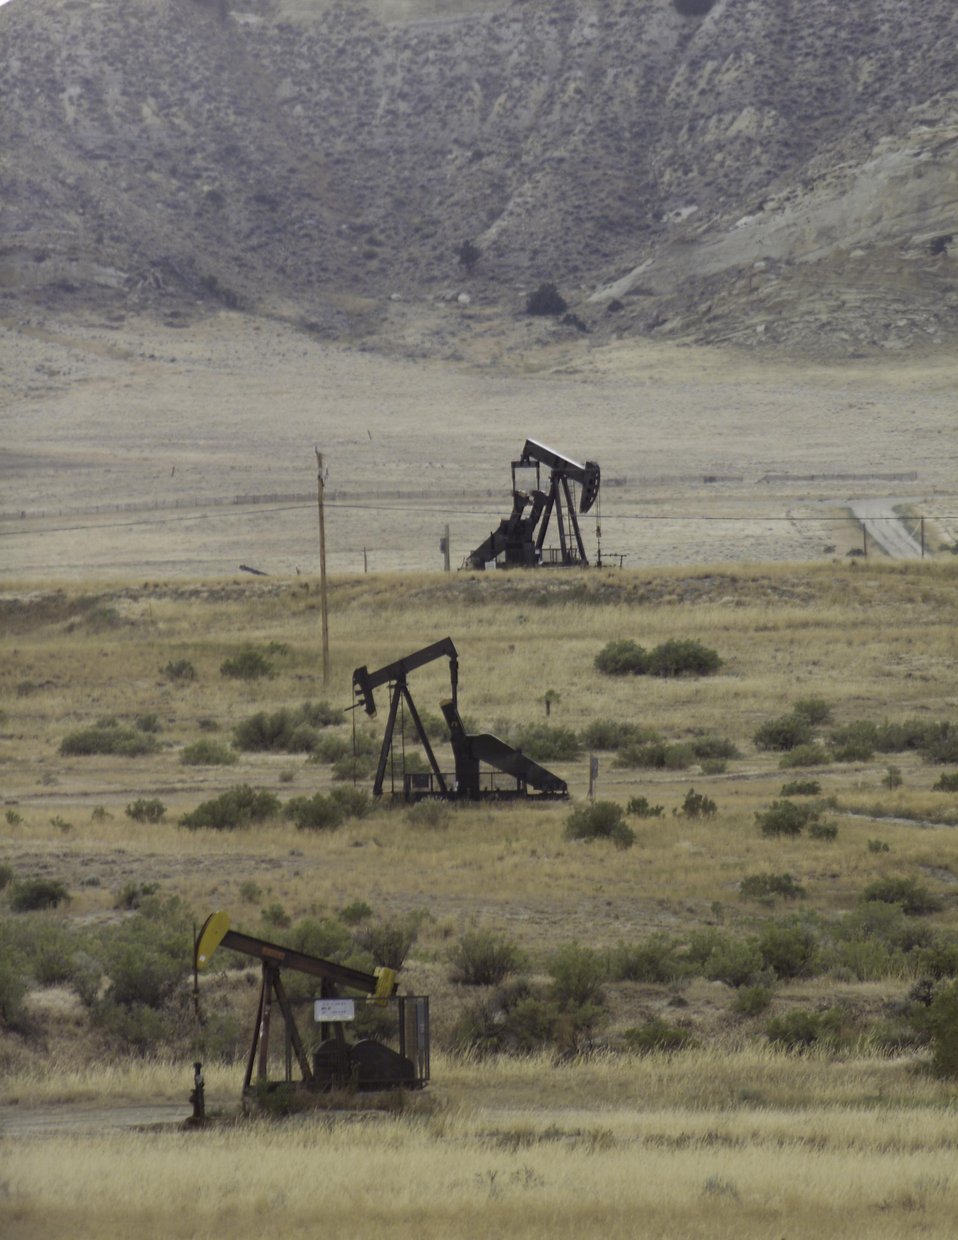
Pump jacks dot the landscape at Naval Petroleum Reserve No.3 (NPR-3) near Casper, Wyoming.

The Rocky Mountain Oilfield Testing Center (RMOTC) is a Department of Energy field test site for emerging and developing technologies to address critical energy issues. The field test site, located on Naval Petroleum Reserve No.3 (NPR-3), is a 10,000-acre site. There are approximately 700 well bores with 600 producing wells ranging in depth from 500 to 5,000 feet.